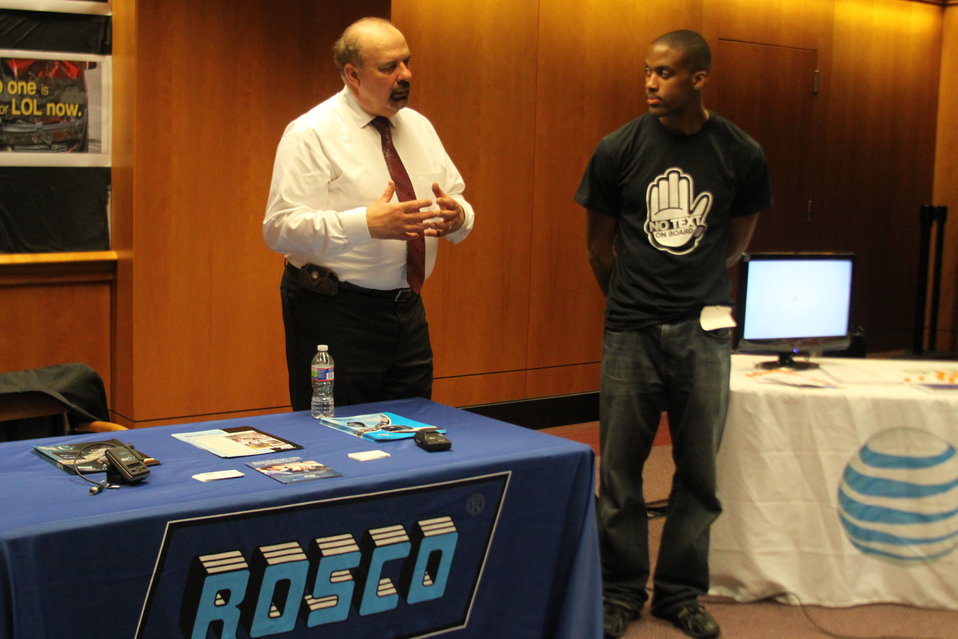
Distracted Driving Technology Showcase April 19, 2013